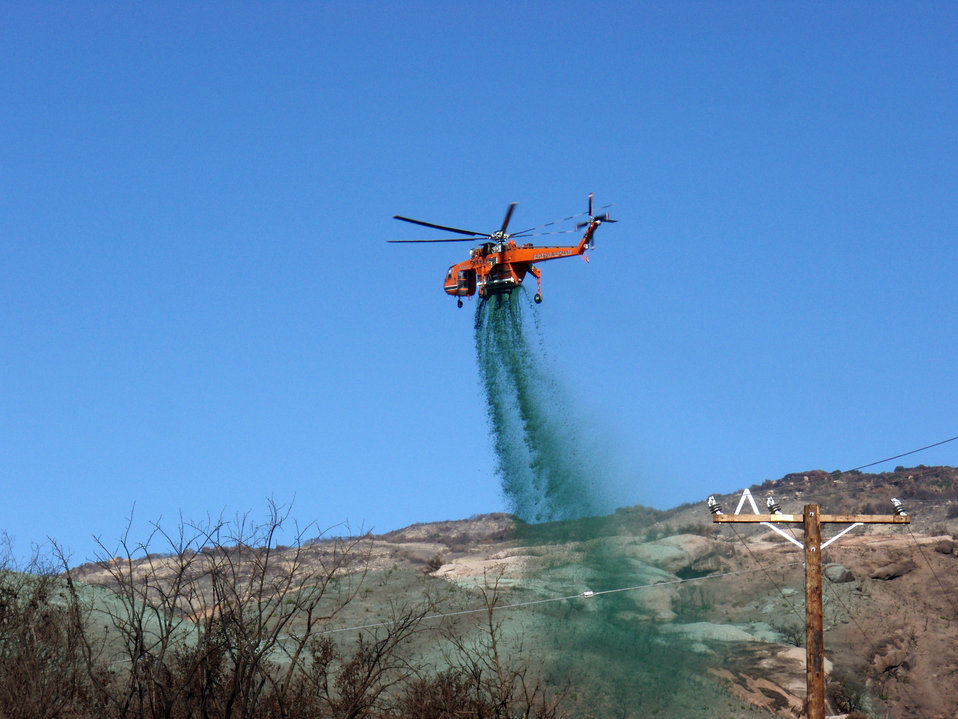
Green businesses

Hydromulch, used for reseeding and erosion control and manufactured by Fiberwood LLC at the former McClellan Air Force Base in Sacramento, Calif., is sprayed after a grass fire near Santa Barbara, Calif. The mulch, made of recycled newspaper, can be applied as soon as a fire is out.